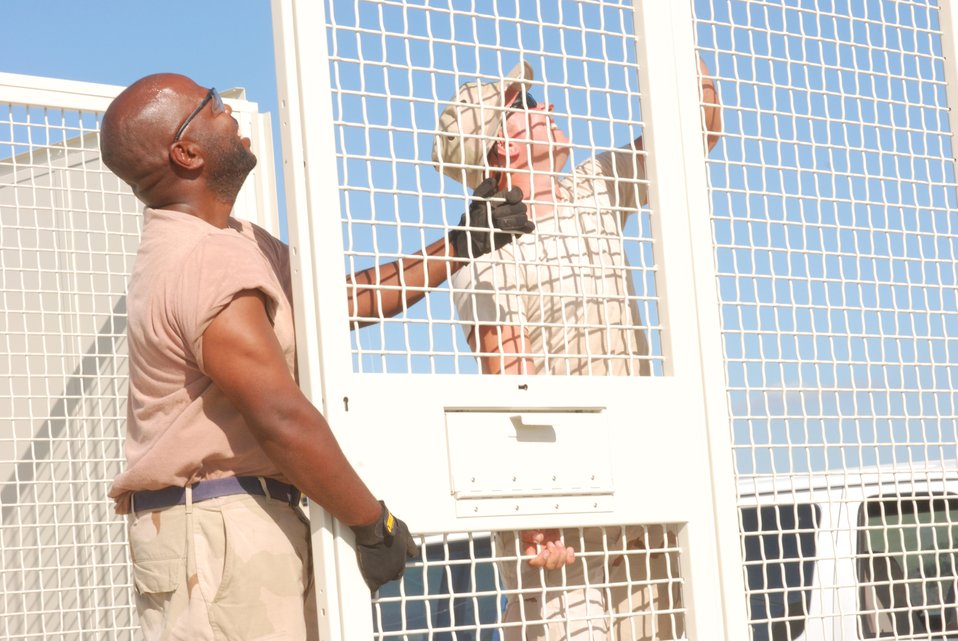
First phase of legal complex nears completion

Senior Airman Kevin Green and Senior Master Sgt. Patrick Obrien maneuver the front piece of a special cell, Dec. 27, designed to hold detainee witnesses during commissions proceedings. Airmen Green and Sergeant Obrien are members of the Air National Guard's 474th Expeditionary Civil Engineer Squadron.